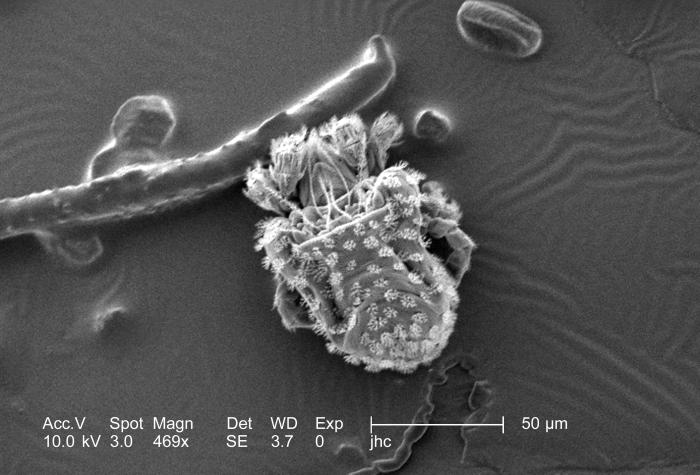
Under a magnification of 469x, this scanning electron micrograph (SEM) revealed the presence of numbers of mites from the specie Nanorchestes sp., Family Nanorchestidae. Members of this specie are free-living, fungivorous soil and leaf-litter/moss mites that were simply an incidental finding on the skin of this lizard. It is not a lizard associate per se, and certainly not parasitic. Under higher magnifications, i.e., PHIL 8808, 8809, the mite's exoskeletal complexities are better appreciated in their diaphanous majesty.